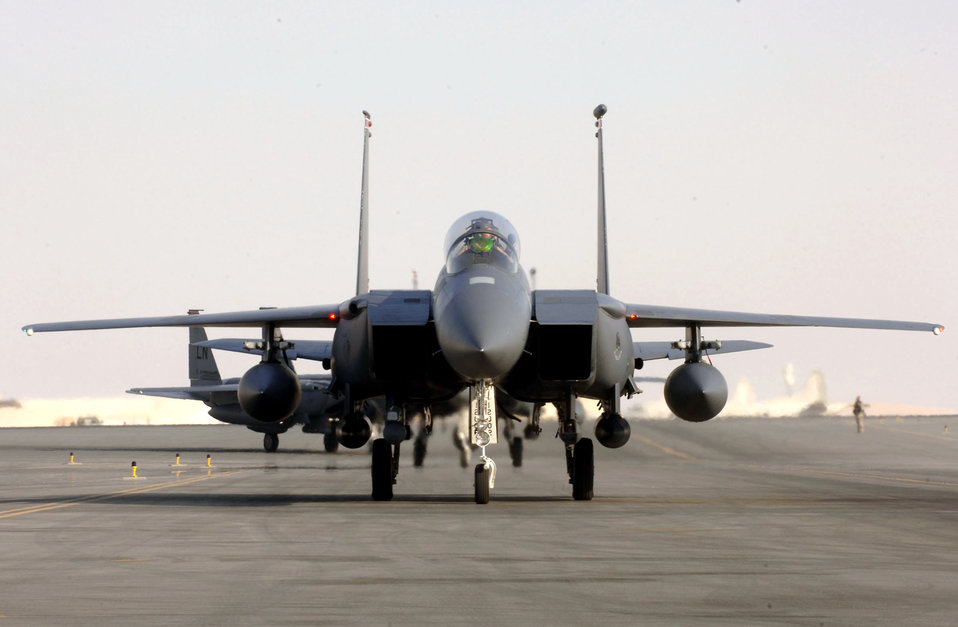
Mission continues during grounding of F-15s

The Air Force grounded its F-15 fleet on Nov. 3 following the crash of a Missouri Air National Guard F-15C aircraft Nov. 2. F-15s assigned North American Aerospace Defense Command and U.S. Central Command Air Forces will be on ground alert and fly missions if required.